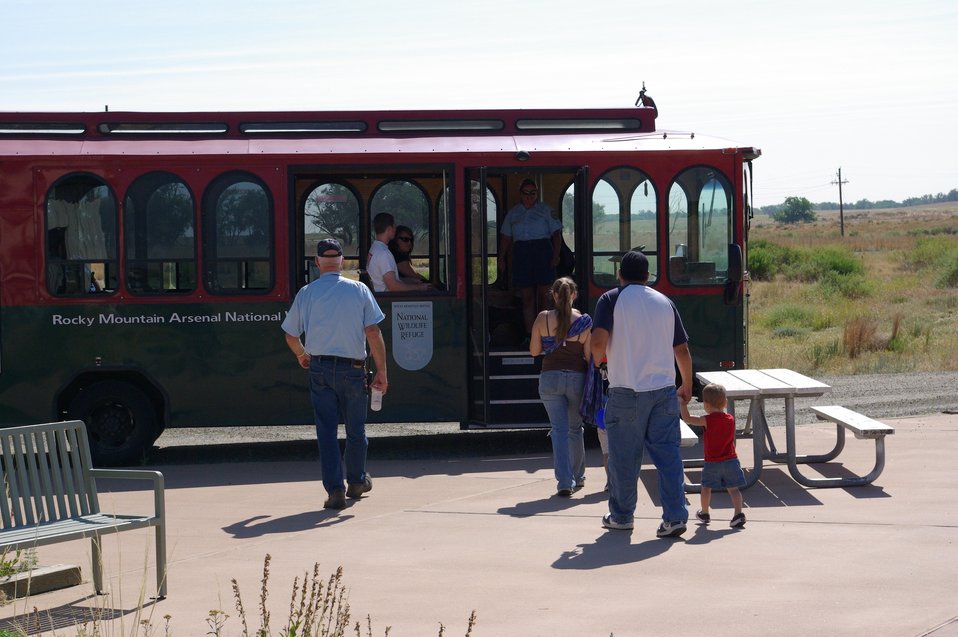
Rocky Mountain Arsenal National Wildlife Refuge

The Arsenal offers free tour groups every Wednesday, Saturday and Sunday at 9:30am. It’s a great way to get out and see wildlife! To join one of these tours contact the visitor center at the Rocky Mountain Arsenal Wildlife Refuge (http://www.fws.gov/rockymountainarsenal/visitors/vc.htm)